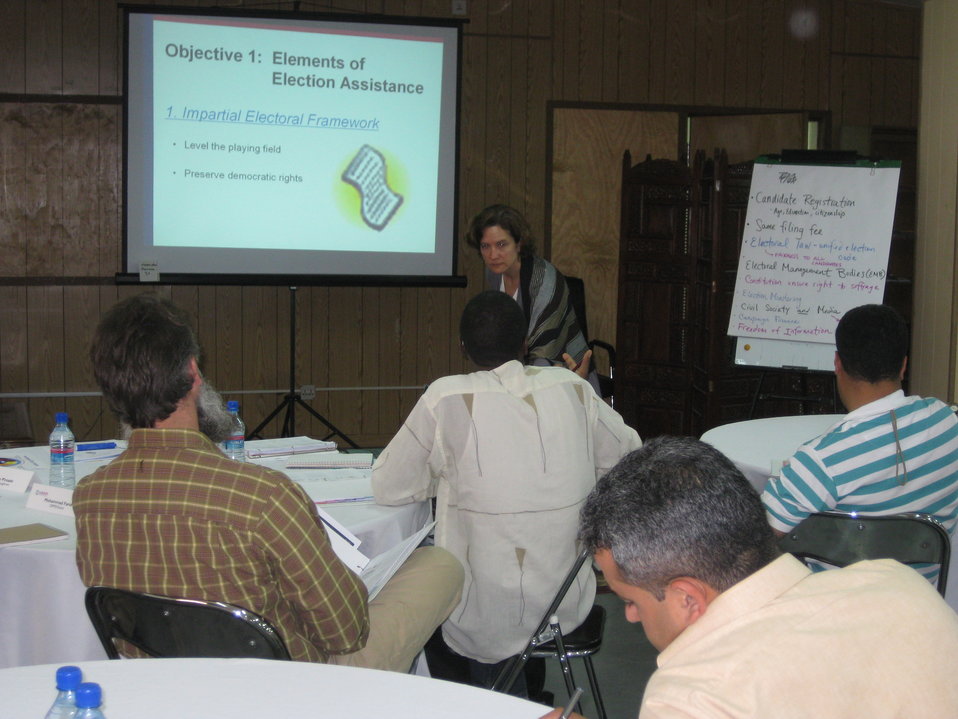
Afghan Youth Voices 038